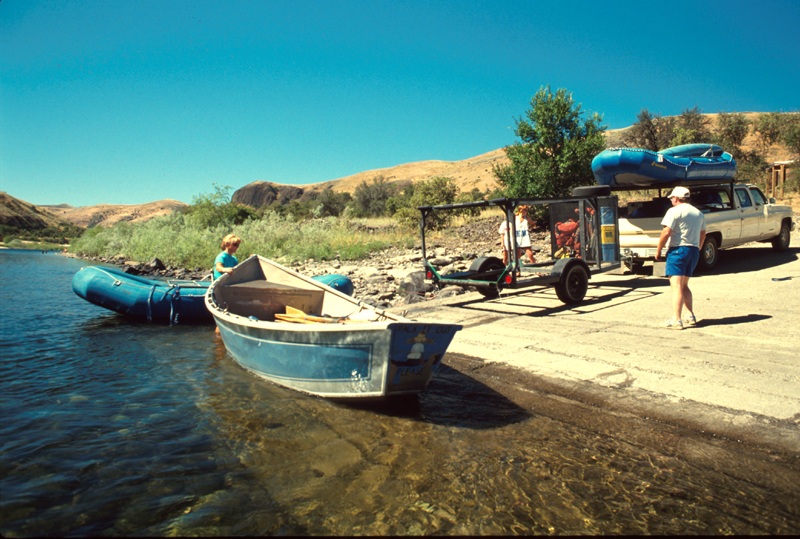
Heller Bar take out Dory and rafting Cottonwood Field Office UCSC Upper Columbia Salmon Clearwater District